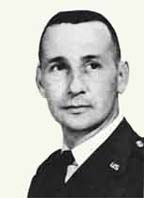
Capt. Hilliard A. Wilbanks

1960's -- Hilliard A. Wilbanks was born in July 1933 and raised in the small, rural community of Cornelia, Ga.